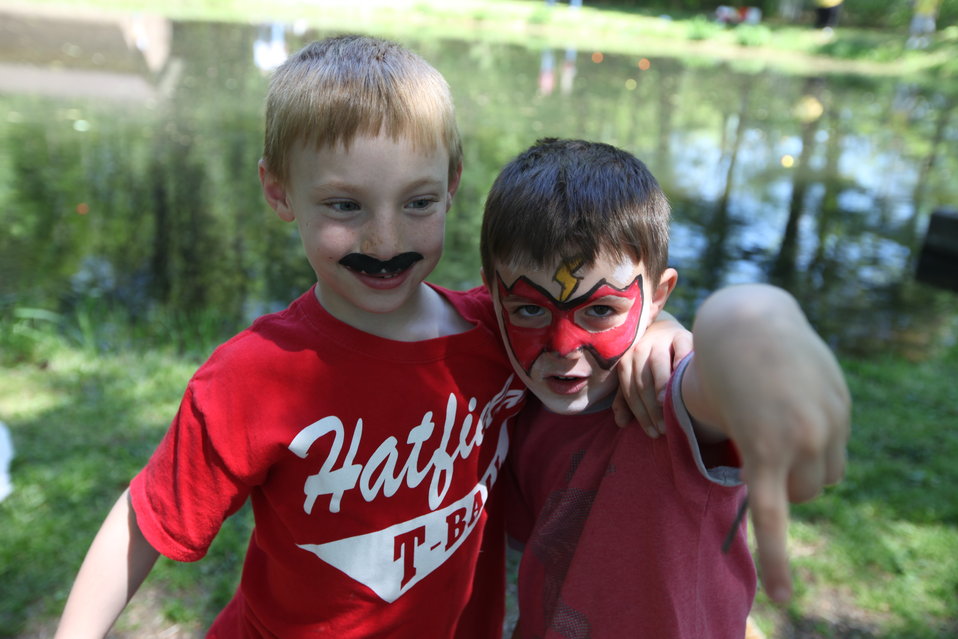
Youth Fishing Derby 2012

Megan Nagel/USFWS